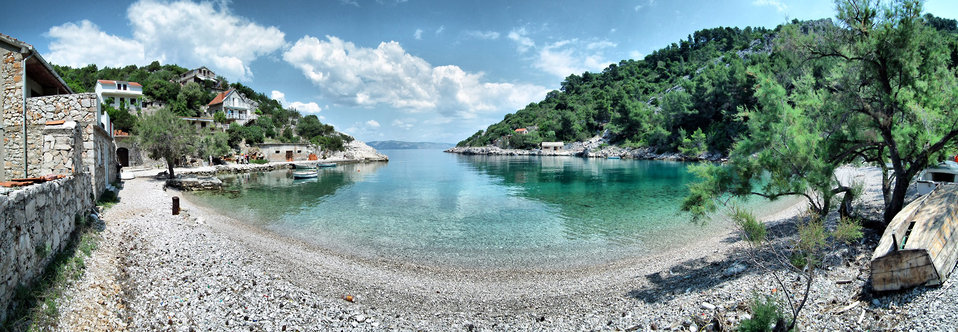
Paradise beach panorama high resolution poster.